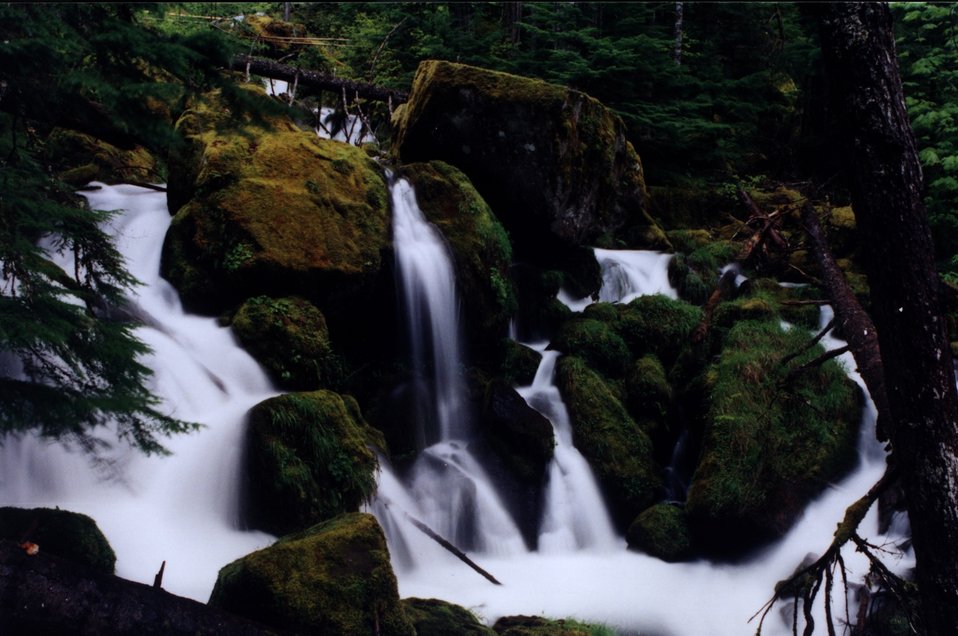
Watson Creek Falls in the North Umpqua River area.